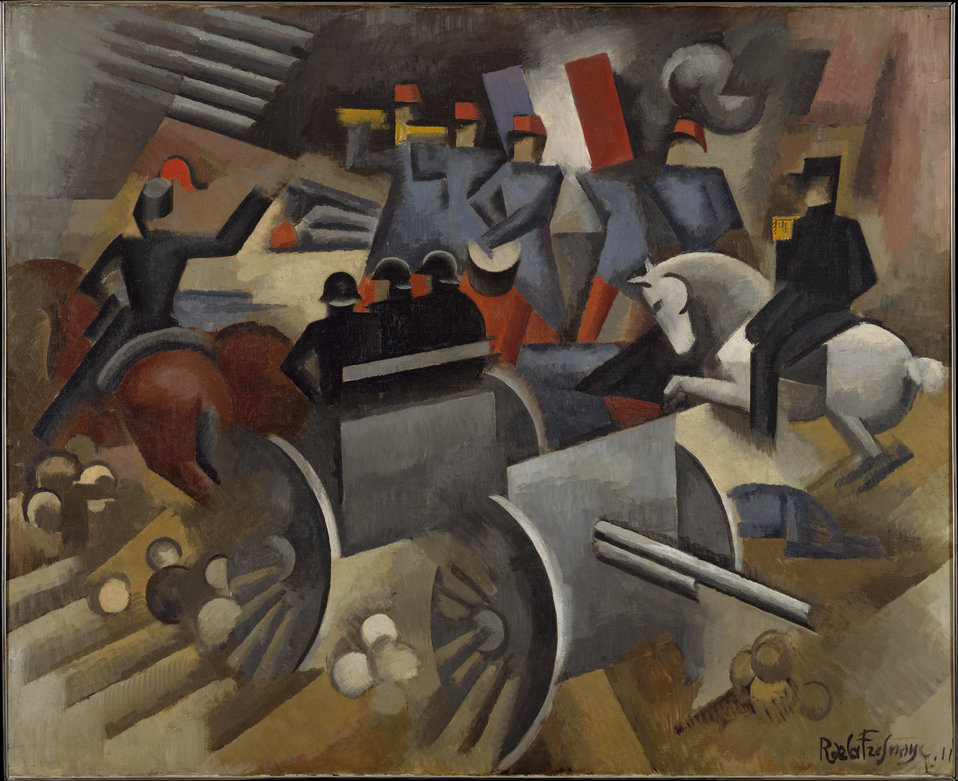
Photograph of Artillery, 1911. Oil on canvas by en:Roger de La Fresnaye in the public domain. en:Metropolitan Museum of Art, New York.